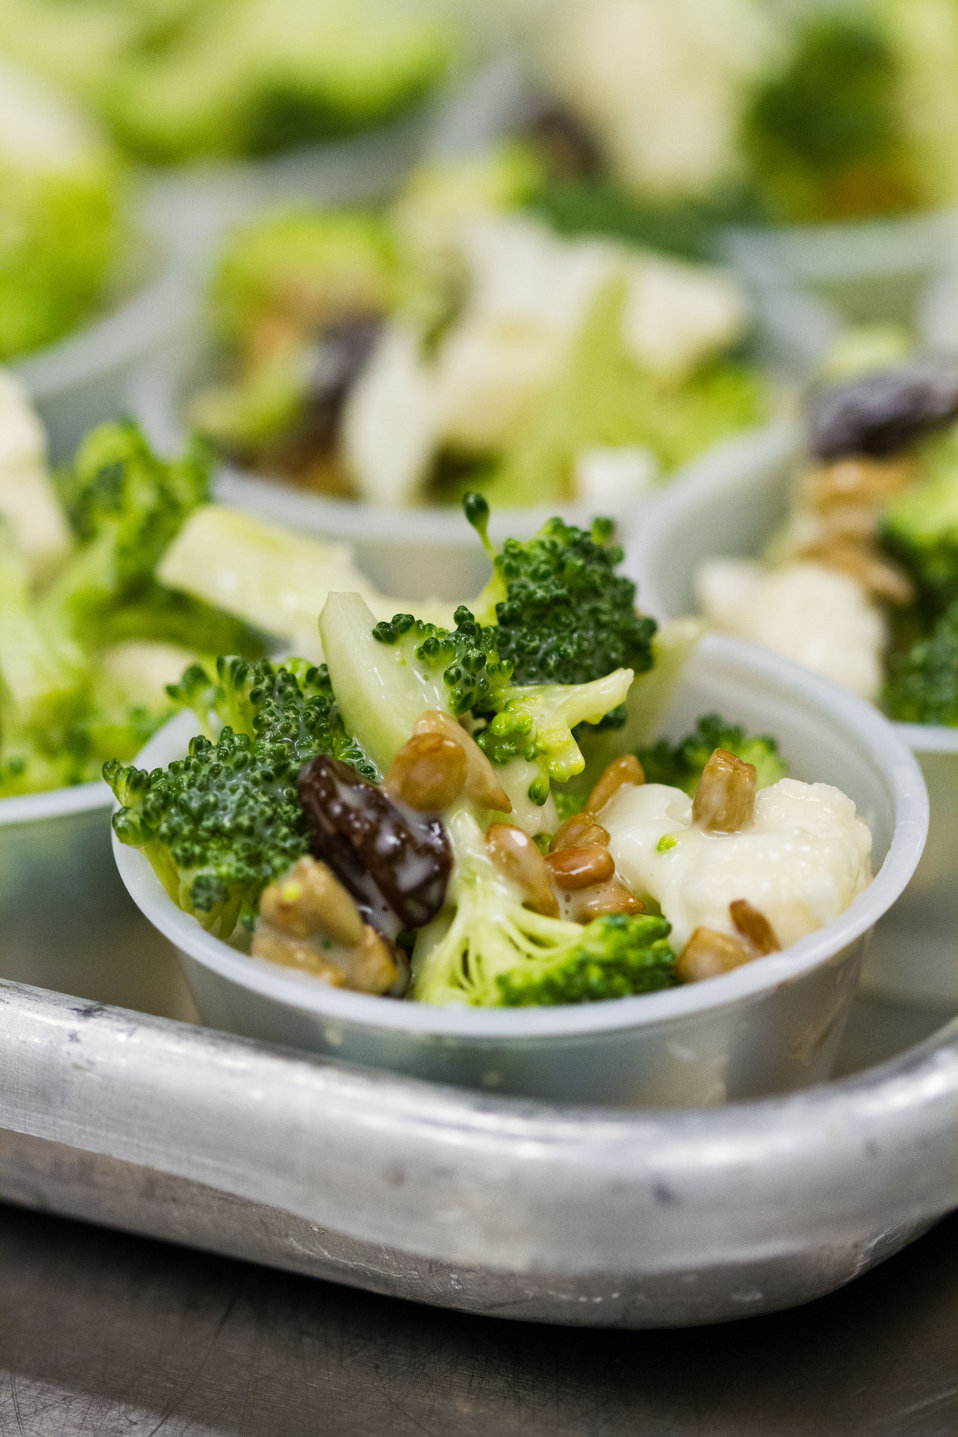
Samples of the sunny broccoli and cauliflower toss ready for more than 50 students from the 5th grade classes at Yorkshire Elementary School in Manassas, VA. The students participated in a taste testing of the new school lunch menu created to meet the new standards. Students tested a sample menu of black-bean filled pizza, pineapple spear, plantain, sunny broccoli and cauliflower toss, and an apple and celery cup with sunbutter dip (a peanut butter substitution), on Wednesday, September 5, 2012.